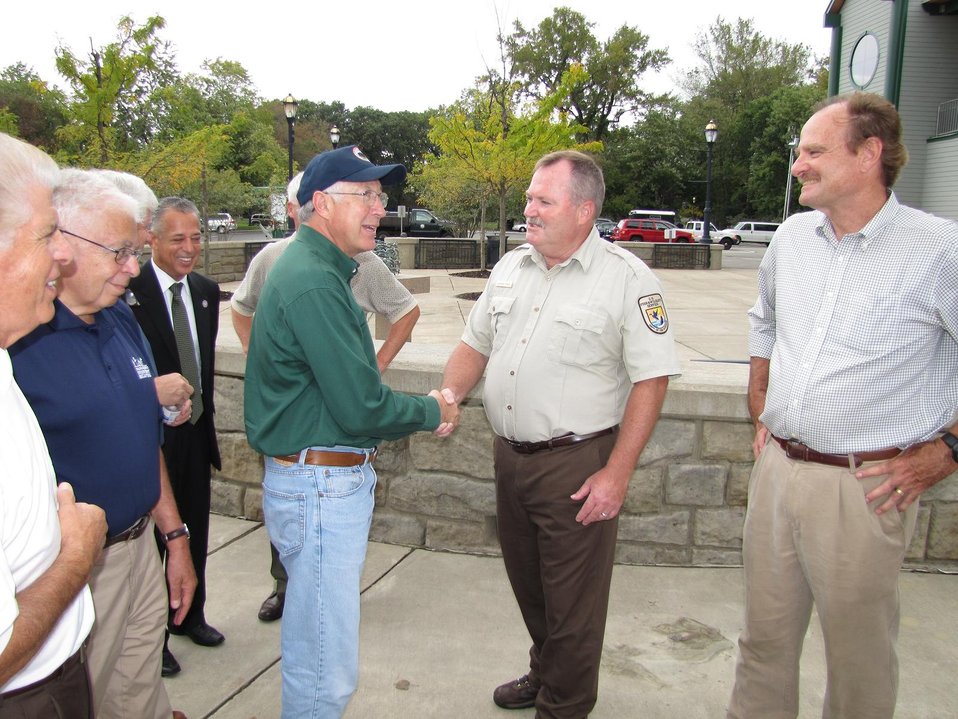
Secretary Salizar and Refuge Manager Andy French